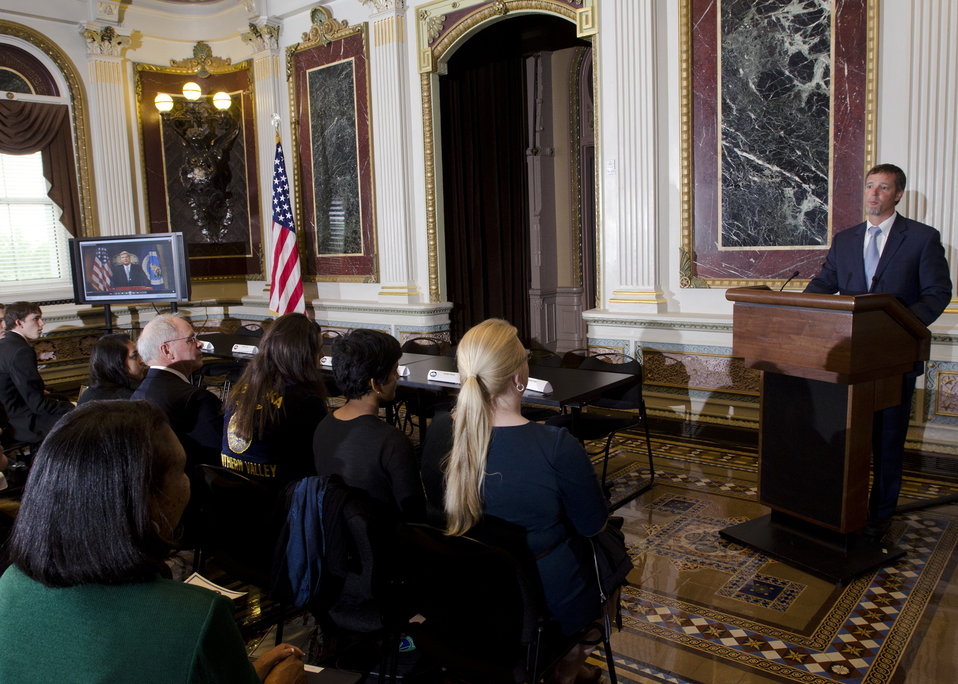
White House Domestic Policy Council Senior Policy Advisor for Rural Affairs Doug McKalip speaks at the Champions of Change awards program at the Executive Office Building in Washington, D.C. on Tuesday, Oct. 9, 2012. The Champions of Change program was created to honor ordinary Americans doing great work in their communities. Each week, a different sector is highlighted and groups of Champions, ranging from educators, entrepreneurs and community leaders, are recognized for the work they are doing to serve and strengthen their communities.